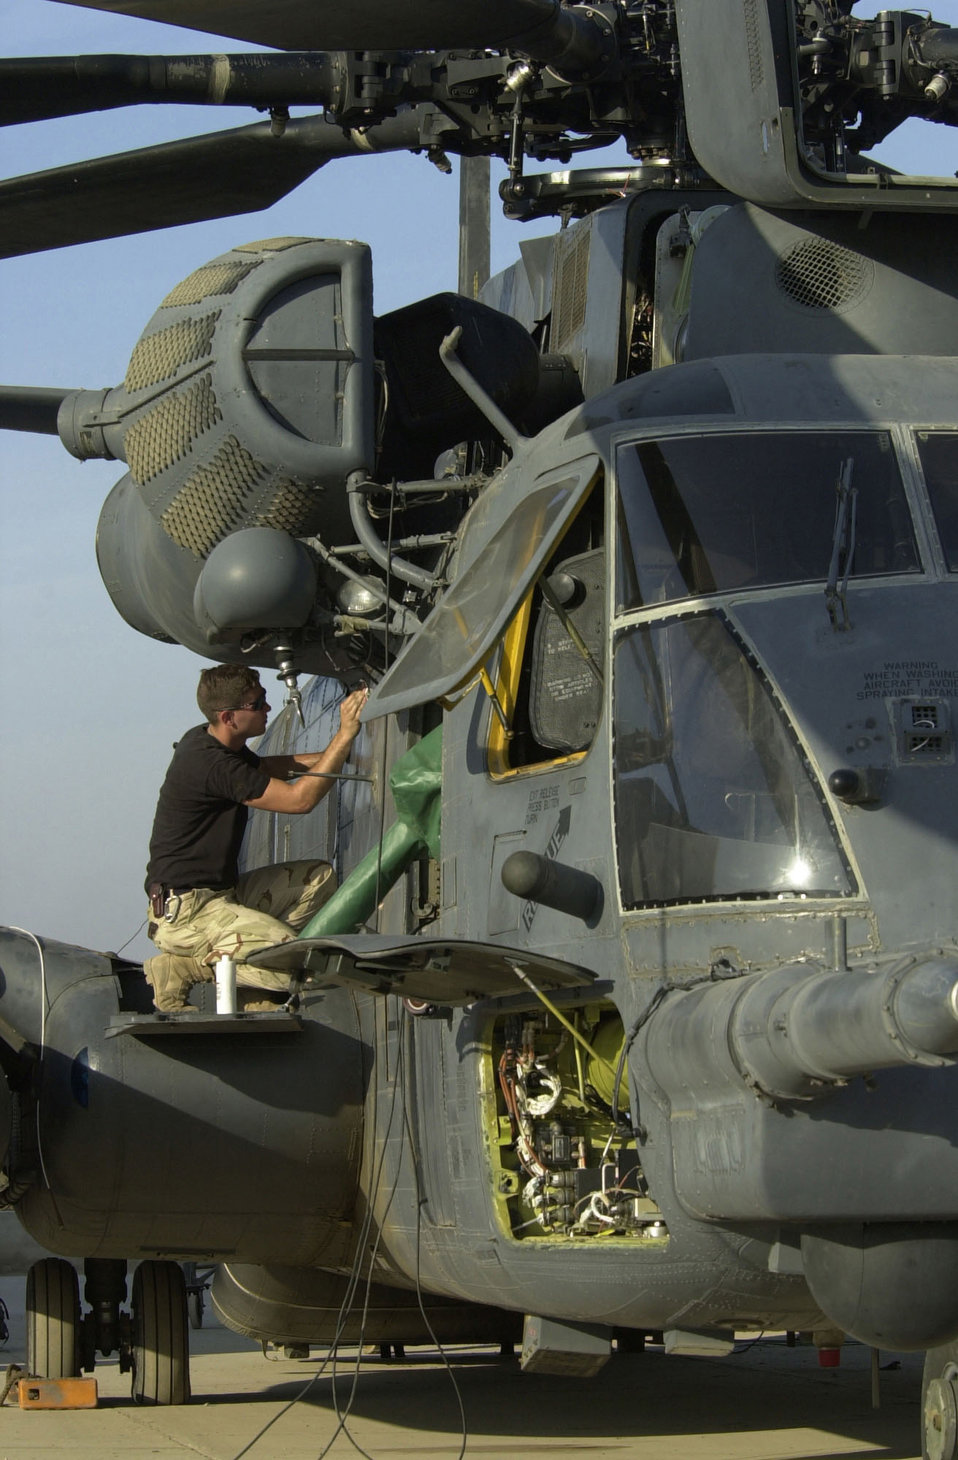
Preparing the Pave Low

OPERATION ENDURING FREEDOM -- Airman 1st Class “Joshua,” an MH-53J Pave Low III helicopter crew chief from the 16th Special Operations Wing at Hurlburt Field, Fla., cleans the exterior of an aircraft at an Operation Enduring Freedom location. The MH-53 is the largest, most powerful and technologically advanced helicopter in the Air Force inventory.